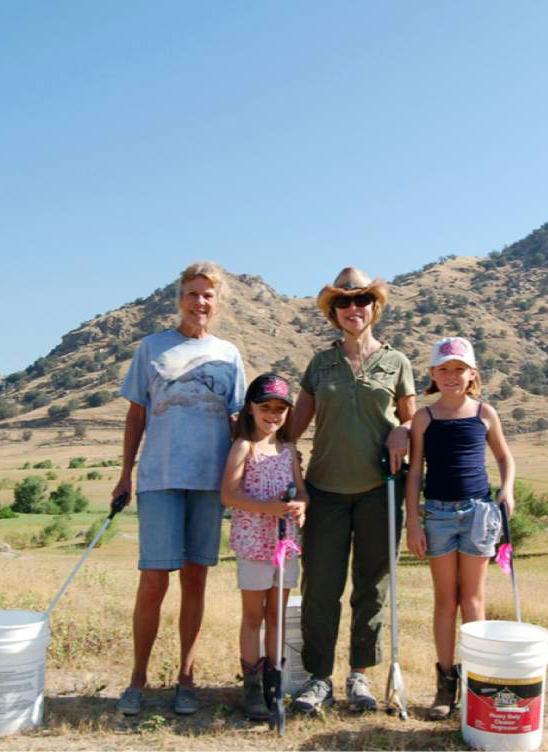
Postcard from the ladies (National Public Lands Day 2012)

On litter patrol at Horse Creek Campground, Lake Kaweah, during National Public Lands Day, Sept. 29, 2012. U.S. Army Corps of Engineers park staff and an army of volunteers celebrated the day with park improvement projects, camaraderie and food. (U.S Army photo by Brady Wendt/Released)